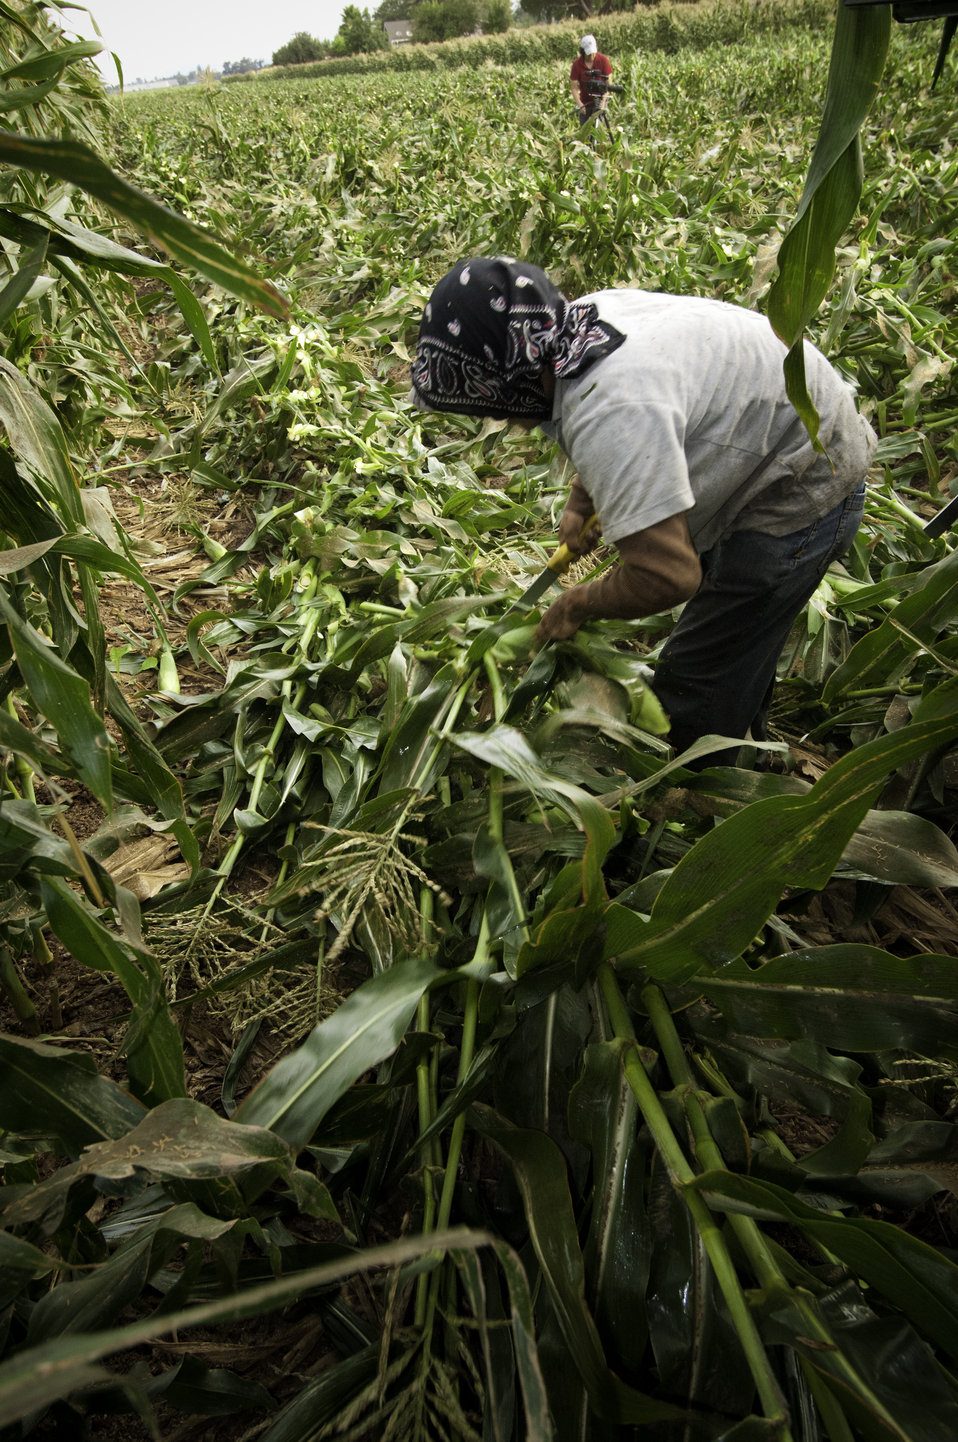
Migrant workers harvest corn on Uesugi Farms in Gilroy, CA on Wednesday, Aug. 28, 2013.